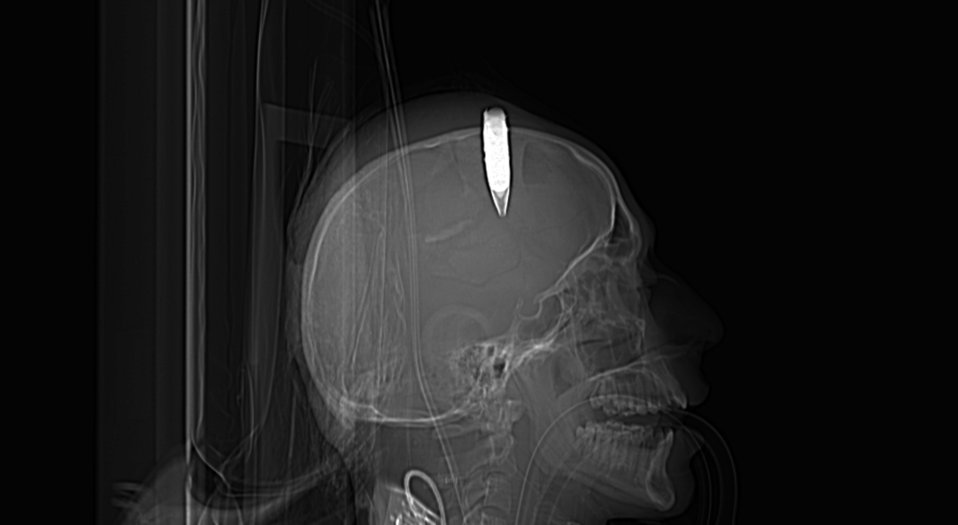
Bagram medics remove unexploded ordnance from patient

This computerized axial tomography scan image shows the placement of a 14.5 mm high explosive incendiary round that was removed from the scalp of an Afghan National Army soldier March 18, 2010, at the Craig Joint Theater Hospital at Bagram Airfield, Afghanistan. The injury was sustained during an improvised explosive device attack.